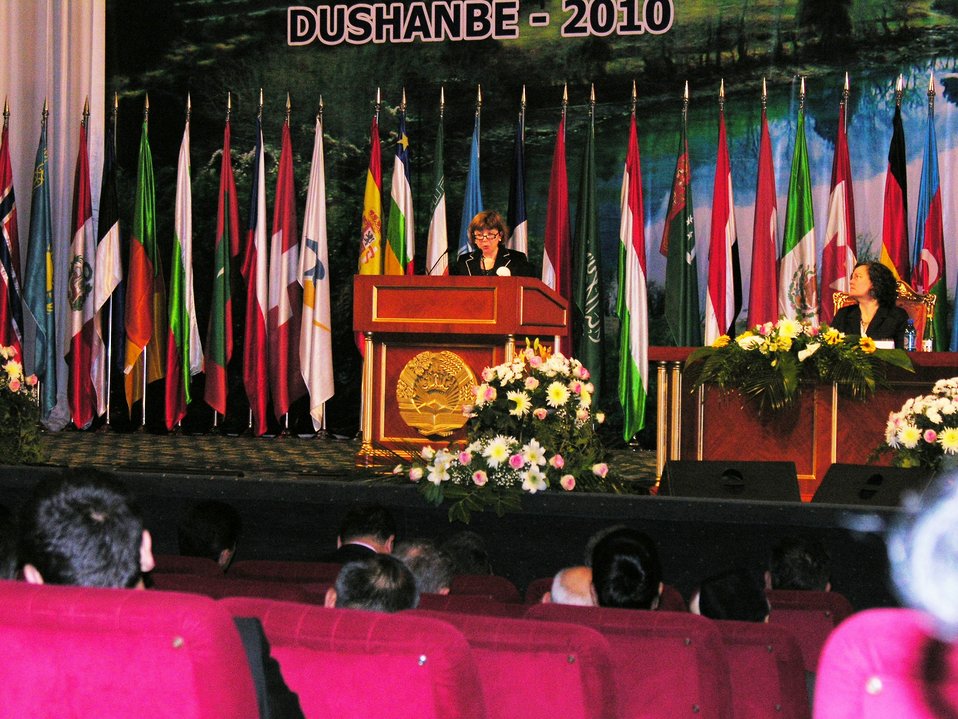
Senior Advisor Spirnak Delivers Remarks at the Water for Life International Conference

Senior Advisor for Biotechnology in the Bureau of Economic and Business Affairs Madelyn Spirnak delivers remarks at the Water for Life International Conference in Dushanbe, Tajikistan, on June 8, 2010.